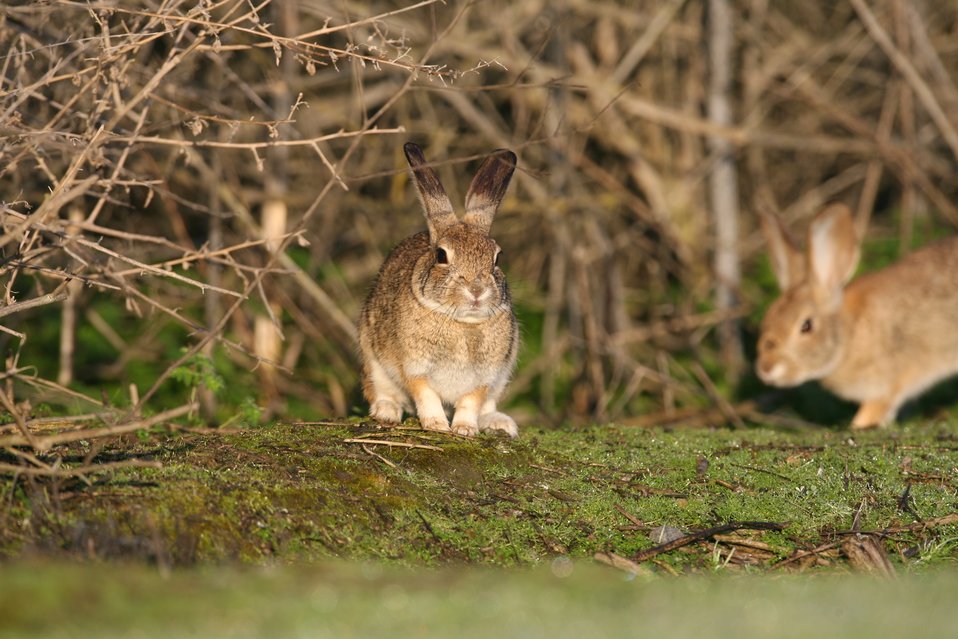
Riparian brush rabbits

San Joaquin River Riparian Brush Rabbits, San Luis National WIldlife Refuge, CA